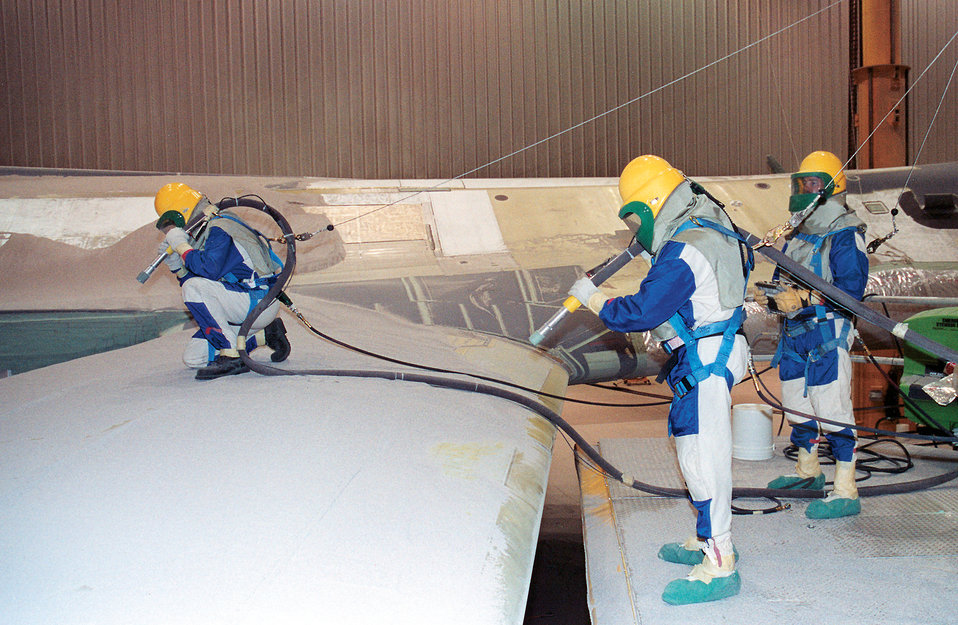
Bare B-1 Lancer

TINKER AIR FORCE BASE, Okla. -- Depot workers (from left) Jeff Lair, Kenneth Gilbert and Patrick Lemmings use a dry media propelled by high pressure to strip multiple coats of paint from a B-1 Lancer here. This was the first B-1 at the Oklahoma Air Logistics Center to use the process.